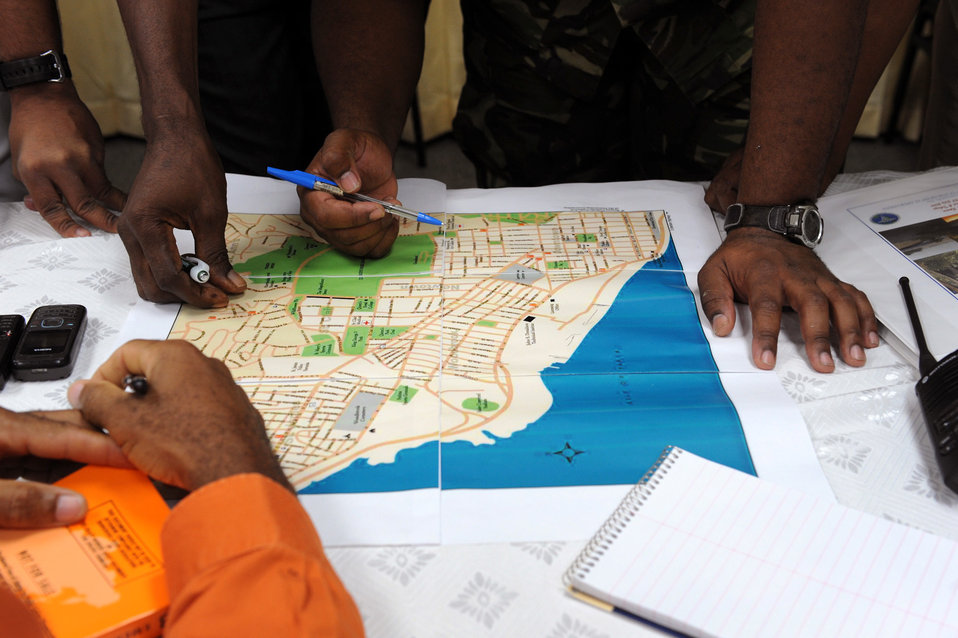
Trinidadian training concludes with counter-terrorism exercise

Local officials attend a disaster planning and mass casualty response class for primary care providers July 23, 2010, in Port of Spain, Trinidad and Tobago. The class is taught by the Defense Institute for Medical Operations, United States Air Force School of Aerospace Medicine, at Brooks City-Base, Texas.